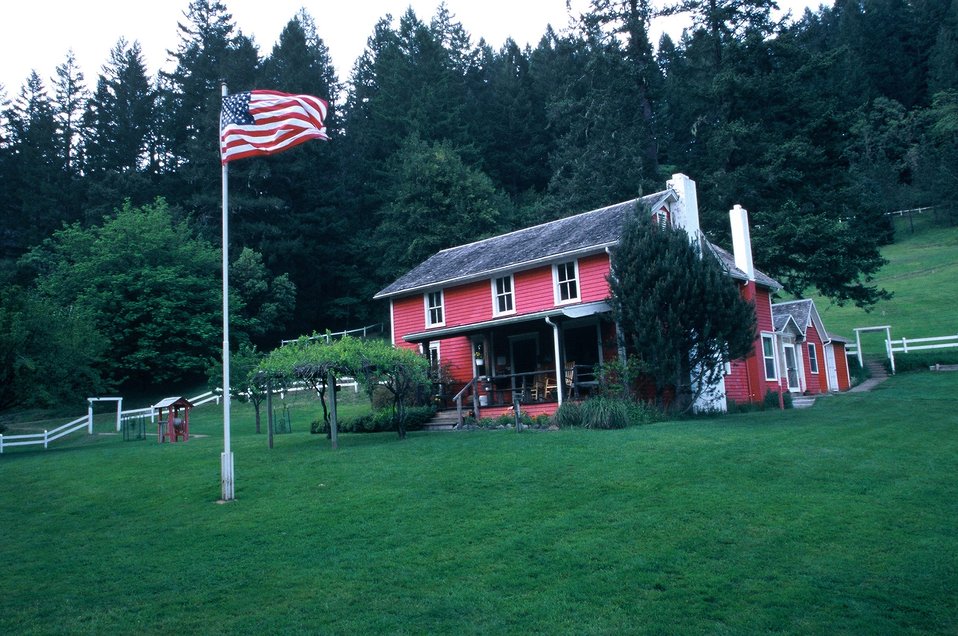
Wild section of the Rogue River from Grave Creek to Foster Bar May 19 to May 22.